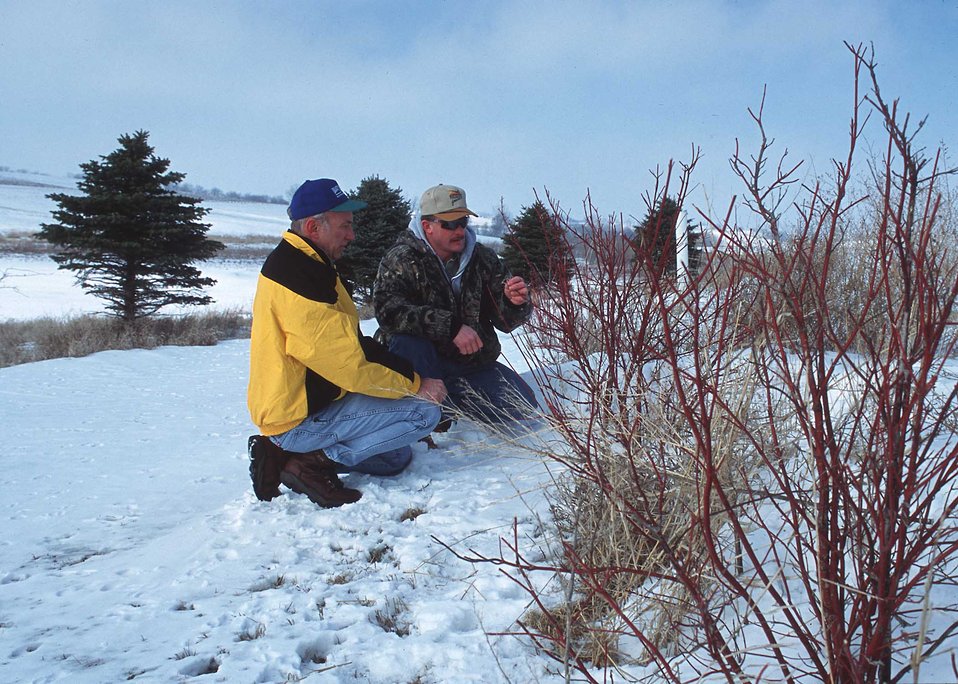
Redosier dogwood are among the shrub and tree plantings for wildife on a Cass County, Iowa farm.